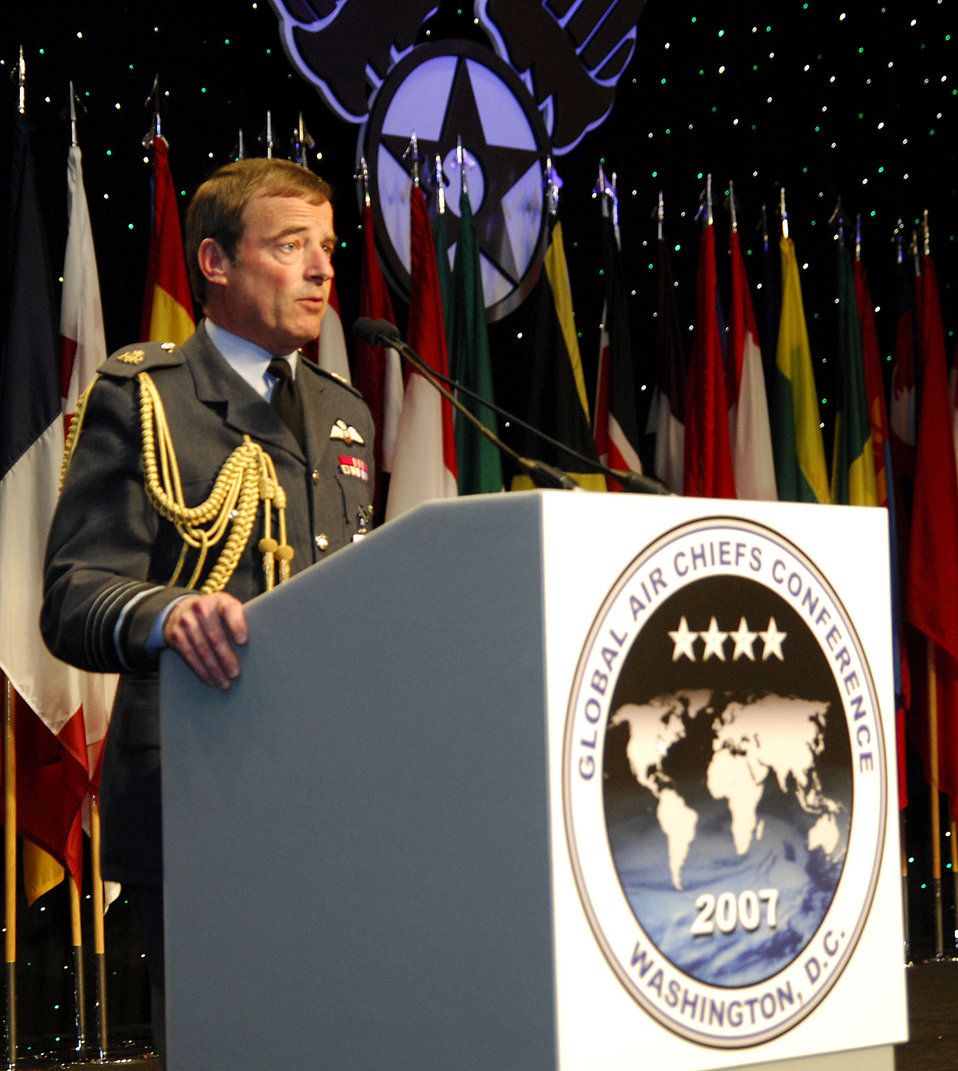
Global Air Chiefs Conference hosts second air chiefs forum

Air Chief Marshal Sir Glenn Torpy addresses more than 90 international air chiefs Sept. 25 at the second of three forums held during the Global Air Chiefs Conference at the Marriott Wardman Park Hotel in Washington. The GACC, hosted by Gen. T. Michael Moseley, runs concurrently with the Air Force Association's Air & Space Conference and Technology Exposition. Air Chief Marshal Sir Torpy is the Royal Air Force chief of staff. General Mosley is the U.S. Air Force chief of staff.